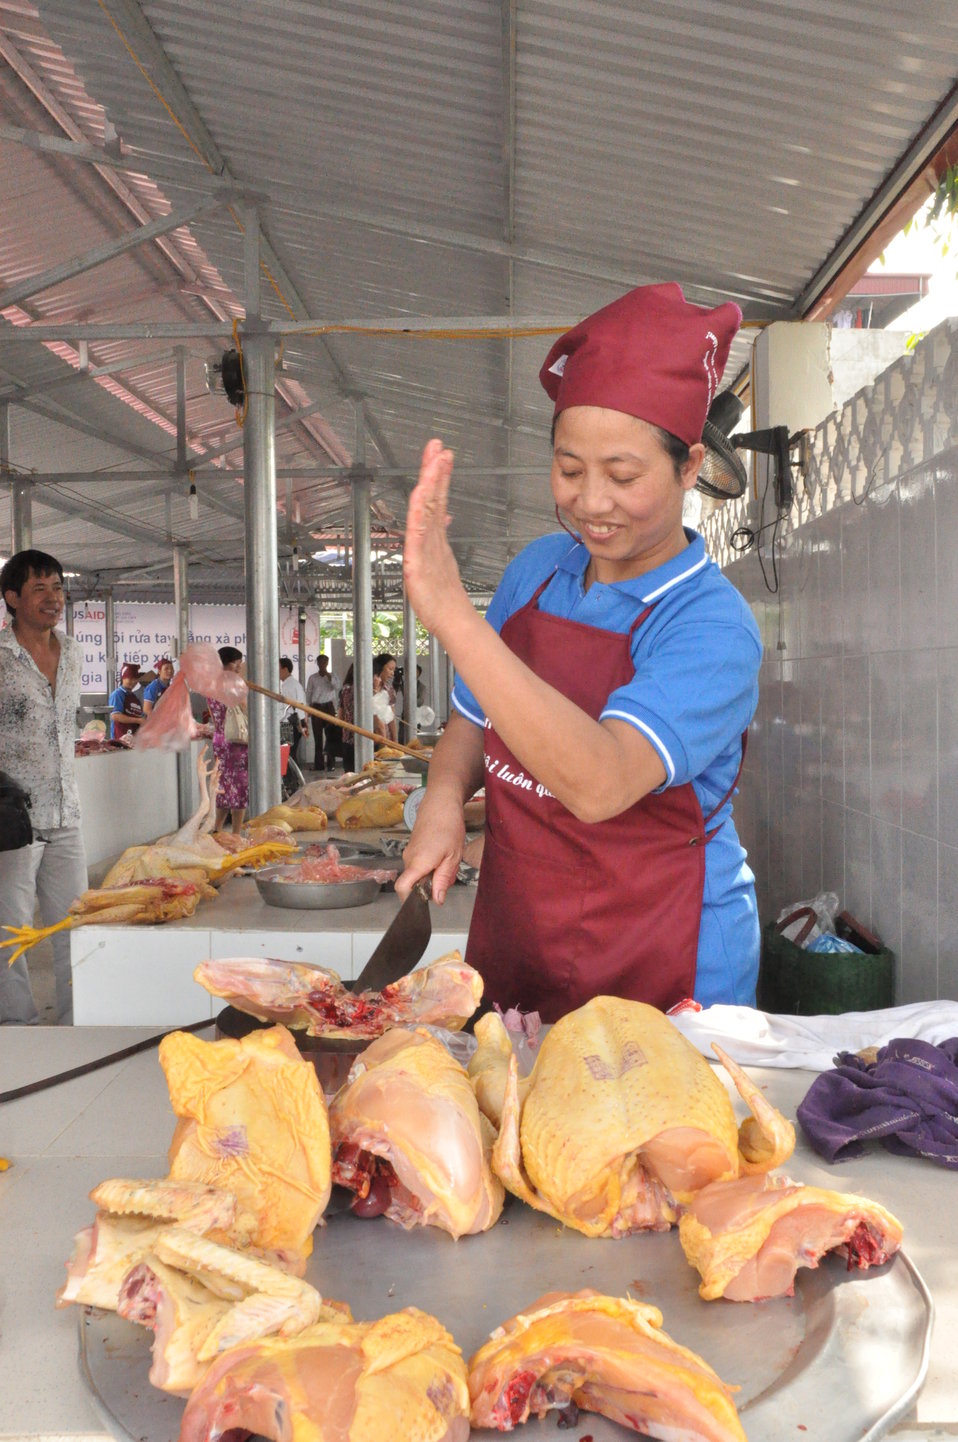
Handover Ceremony Hoa Mac Market, Ha Nam

October 26, 2012 Photo: Richard Nyberg, @USAIDVietnam